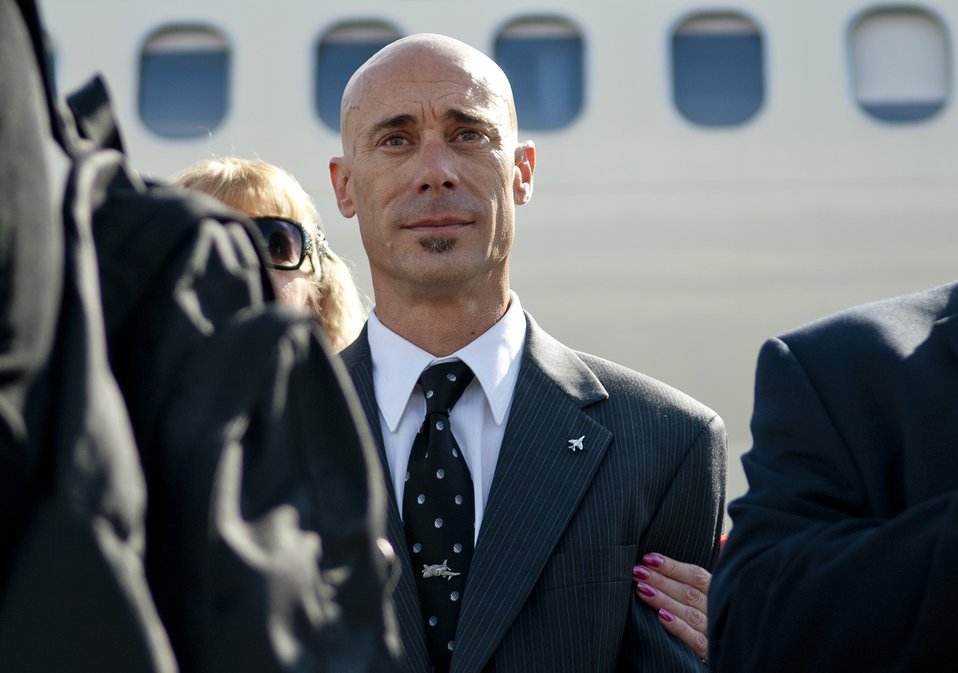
Full military honors

Michael Keller watches as the remains of his father, Col. Wendell Keller, of Fargo N.D. and Capt.Virgil K. Meroney, of Fayetteville, Ark., are carried in a casket draped with the U.S. Flag by the U.S. Air Force Honor Guard team to a hearse at Ronald Reagan Washington National Airport Oct. 18, 2012. March 1, 1969, Keller and Meroney were the crew of an F-4D Phantom II aircraft that went down while carrying out a night time strike mission in Khammouan Province, Laos. Nearby aircrews reported seeing the aircraft hit by enemy fire. No parachutes were seen after the aircraft was hit. Heavy enemy presence in the area prevented recovery efforts.